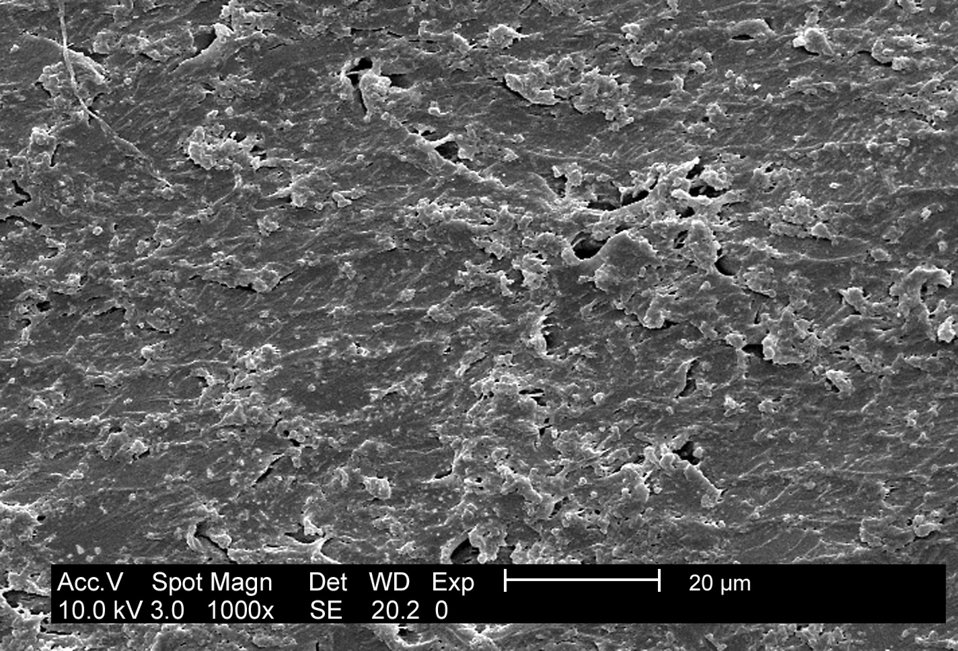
This SEM depicts an E. coli (ATCC 11775) biofilm grown on PC (polycarbonate) coupons using a CDC biofilm reactor.